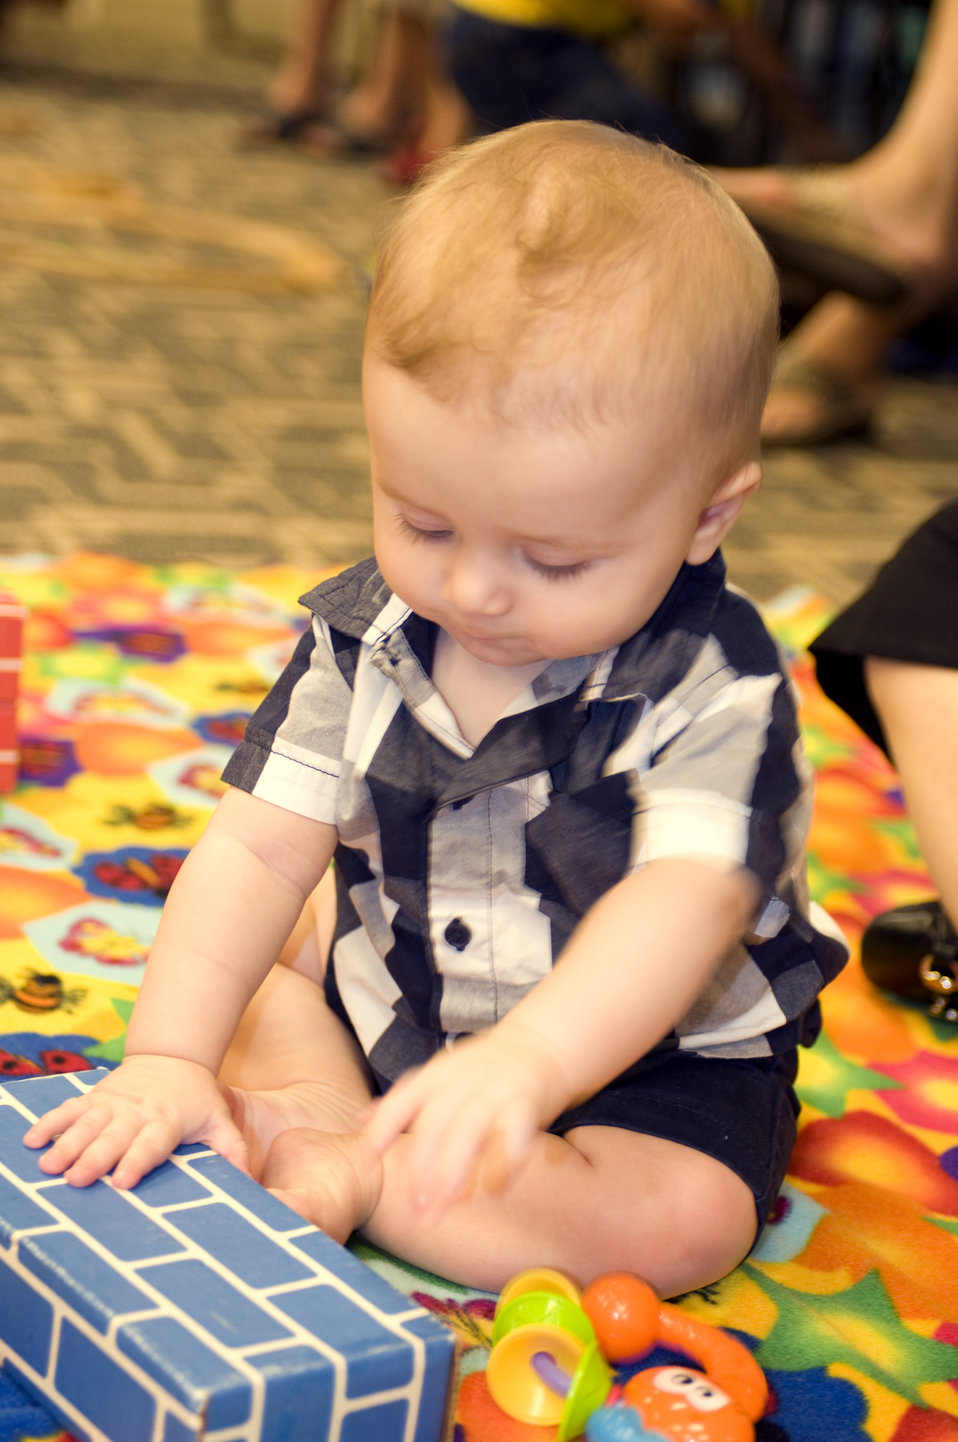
The boy depicted here was playing with one of his toys while seated in a cross-legged position on a carpeted floor. The feet of the seated parents and instructors can be seen in the background.